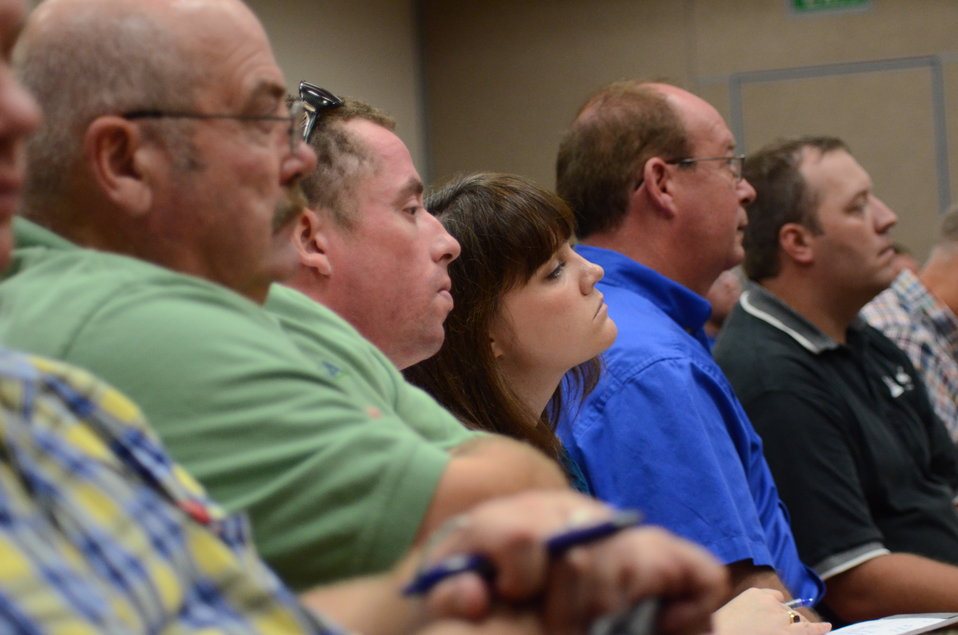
Members of the audience listen to Agriculture Secretary Tom Vilsack speaks at the White House Rural Forum at the Wisconsin State Fair, in West Allis, WI, on Thursday, August 4, 2011, to businesses and community leaders, farmers and ranchers to explore ways federal, state and local officials can work together to improve economic conditions and create jobs. The forum is part of a series of White House Rural Roundtables that are being held across the country this summer with senior Administration officials.